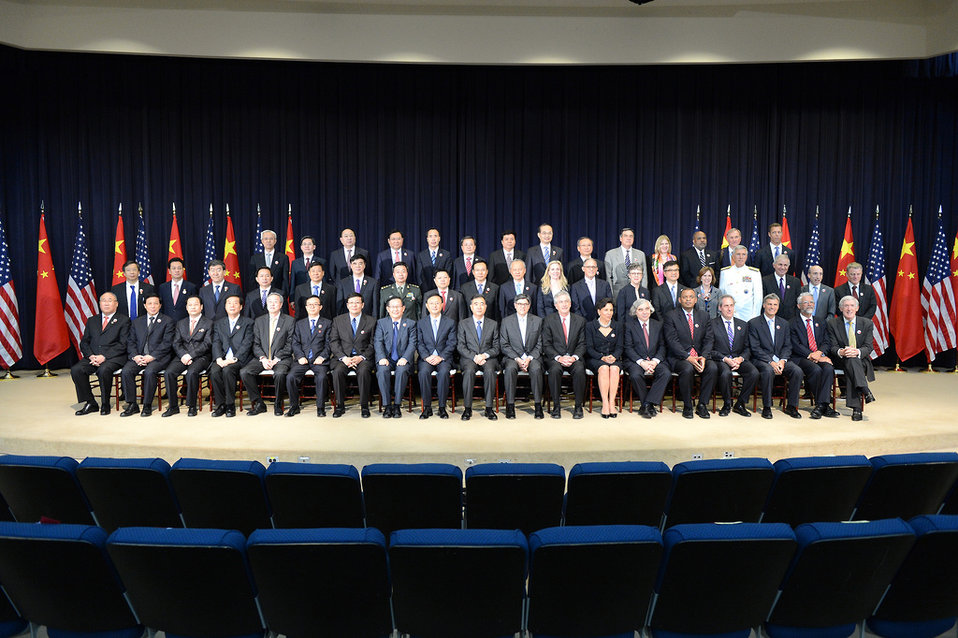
Fifth U.S.-China Strategic and Economic Dialogue

U.S. and Chinese leaders pose for a photograph during the fifth round of the U.S.-China Strategic and Economic Dialogue at the Harry S Truman Building in Washington, D.C., July 10, 2013.